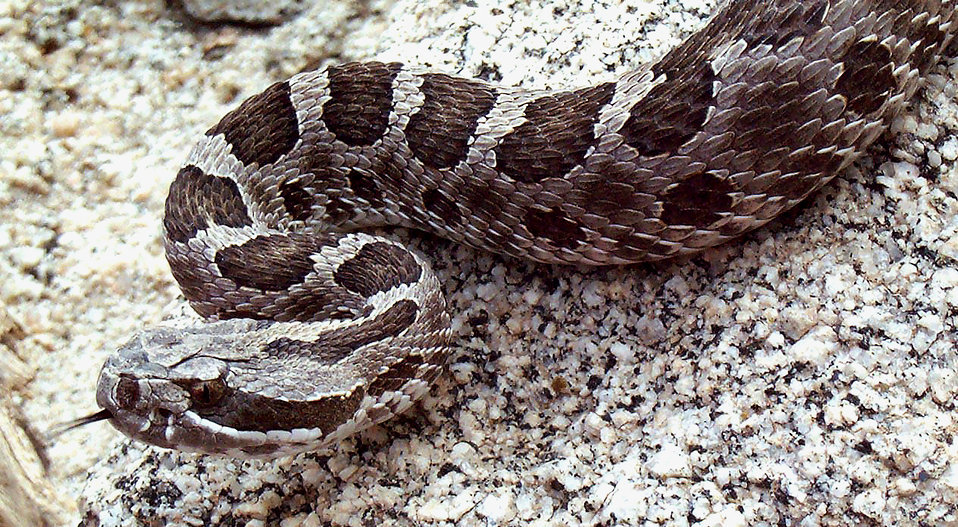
This image depicted a 'western Massasauga' rattlesnake, Sistrurus cantenatus tergeminus, which is spottily distributed throughout the Great Plains grasslands including the tallgrass prairie along the central Gulf Coast in Texas (Tennant, 1997). Within the hurricane strike zone, this snake's range is limited to the Texas Gulf Coast from a small area near the city of Palacios, northwestward towards the Panhandle (Price, 1996). This is important for the residents of, or first-responders to these areas in case of such a disaster.The ground color of the western massasauga is typically gray to tan and the dorsum bears a series of round. to irregularly-shaped dark blotches. The sides of the head display a dark, white-edged mask that runs diagonally from the crown across both eyes, and ends posteriorly to the corners of the mouth (Connant, 1975; Tennant 1998). The ventral scales of this subspecies are mottled with gray pigment (Connant, 1975).